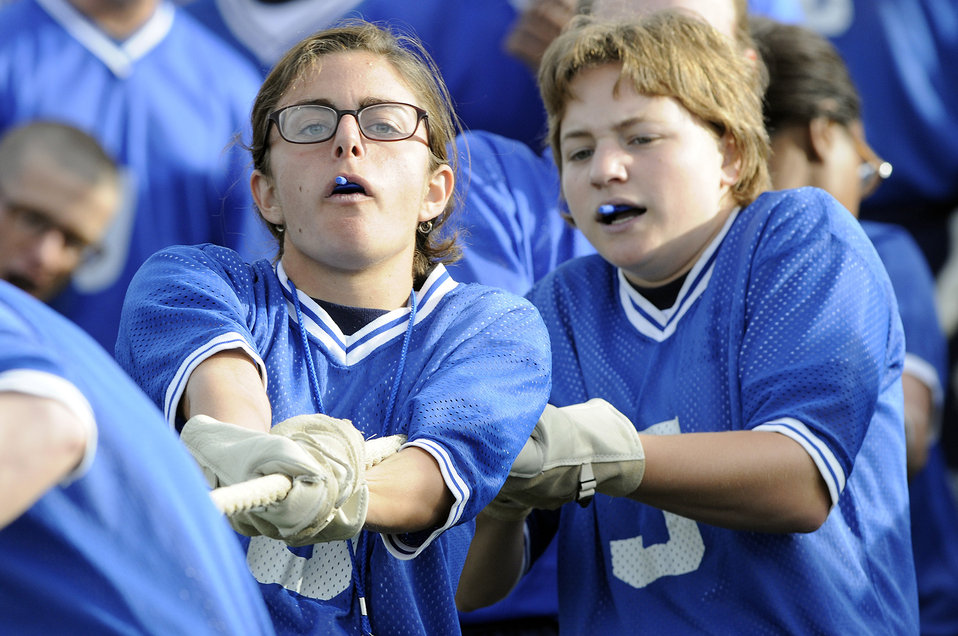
Class of 2013 Field Day

Basic cadet trainees with the U.S. Air Force Academy's Class of 2013 participate in the tug of war during Field Day activities here today. About 1,344 trainees competed in various athletic events during Field Day, including tug
of war, log relays, steeple chase and sprint relays. Basic cadet training started June 25 and continues through Aug. 1. The new cadets are in their first month of training and are learning about Air Force heritage, honor, discipline and Air Force core values, in addition to improving physical
fitness. The fall academic semester begins Aug. 6.